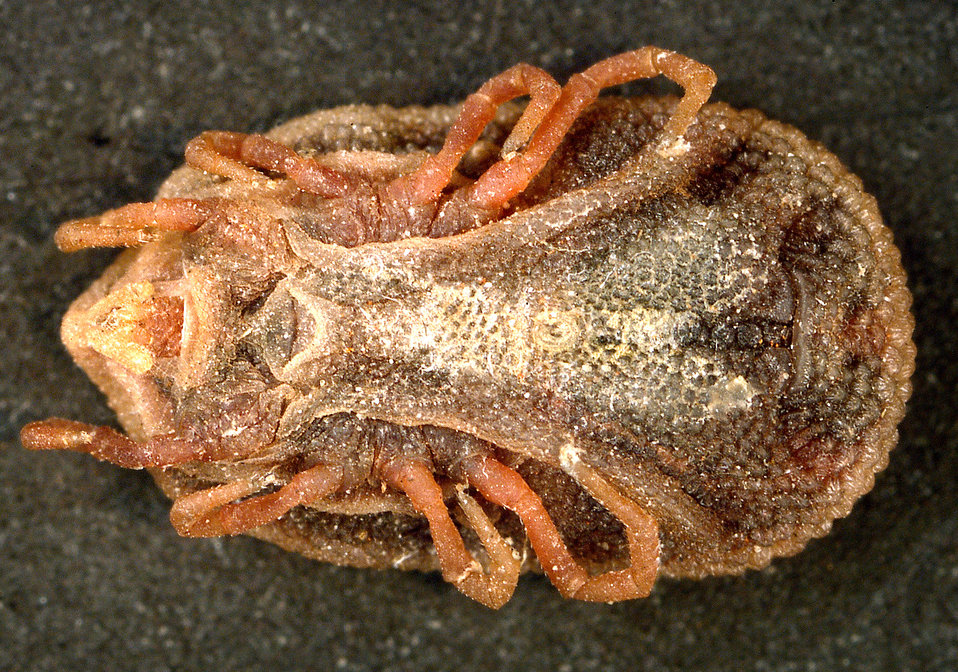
This is a ventral view of the 'soft tick' Carios kelleyi, formerly Ornithodoros kelleyi, or the 'Bat Tick'.